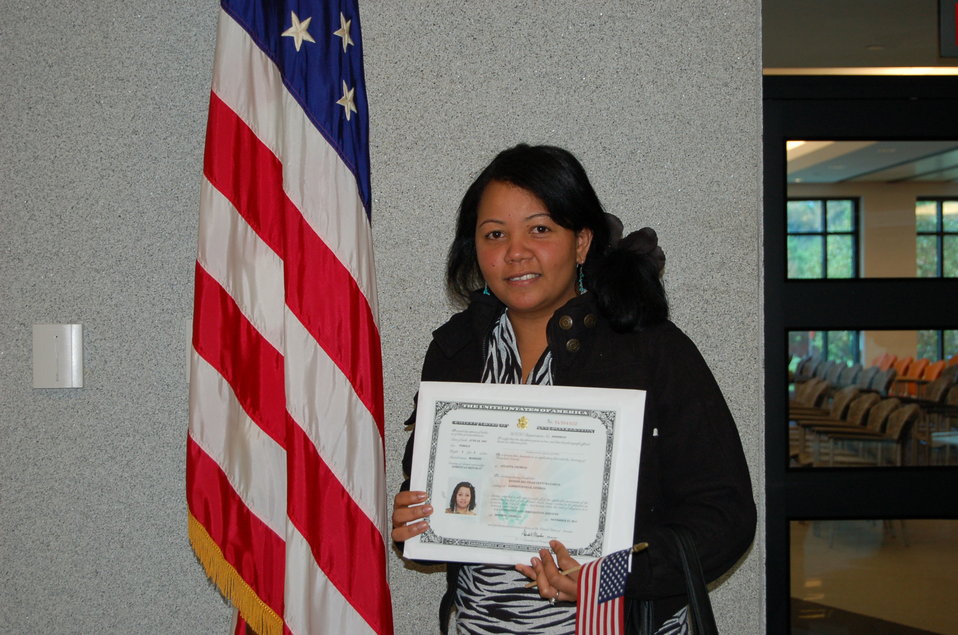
New Citizens